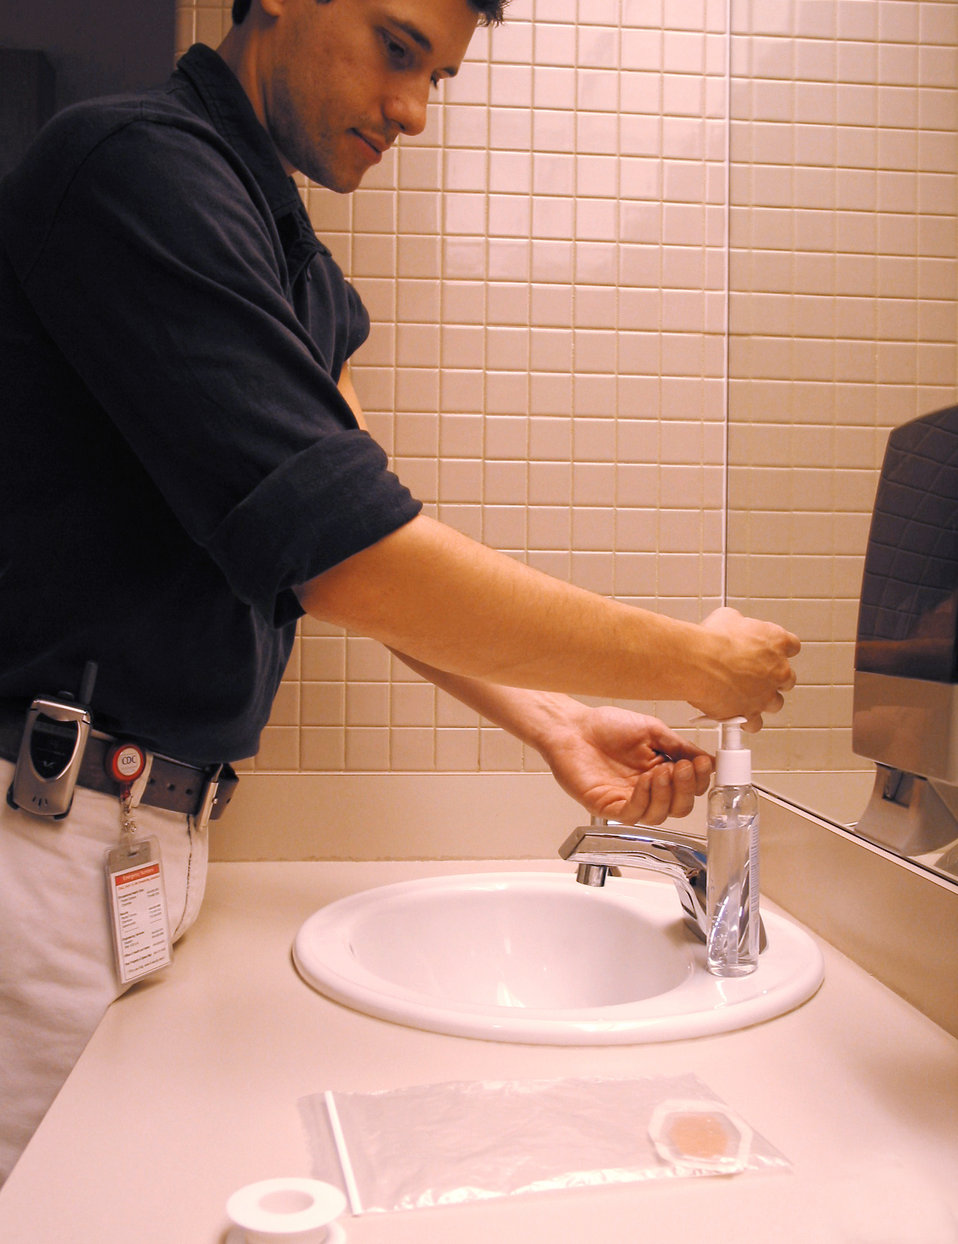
This image demonstrates how a smallpox vaccinee washes his hands after handling his vaccination site bandage.